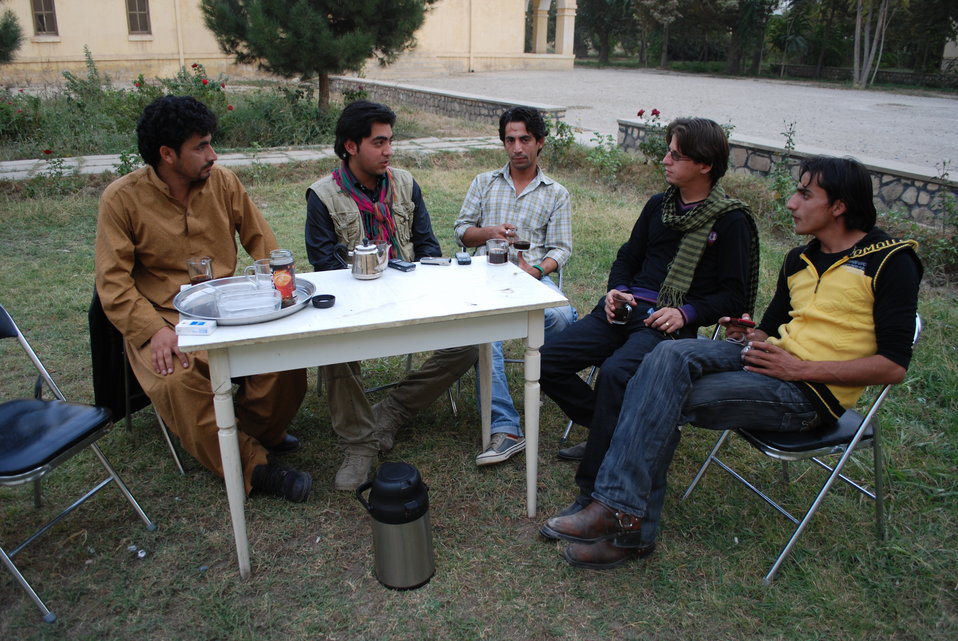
'On the Road' in Balkh Province